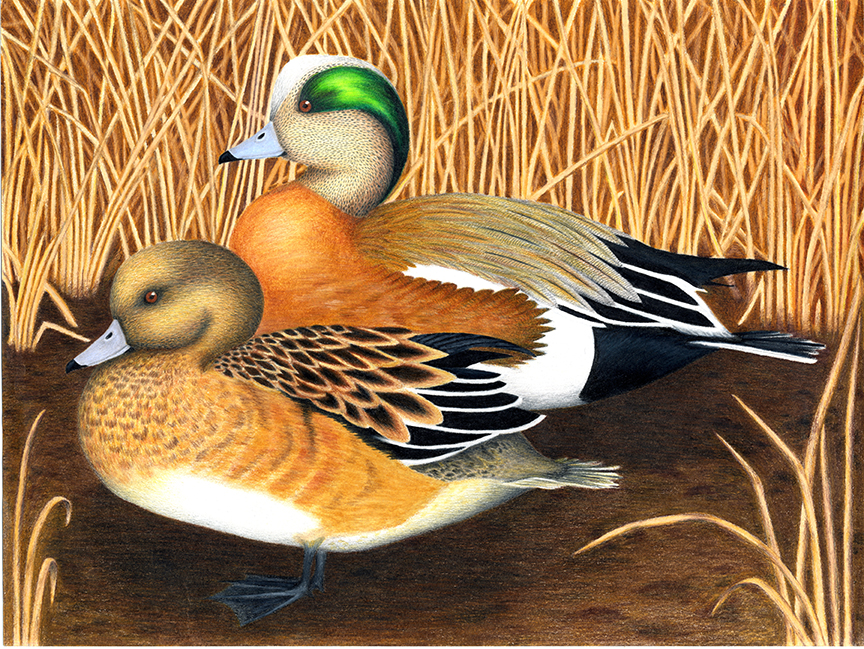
JRDuck2013KS

2013 Junior Duck Stamp Best of Show-Kansas